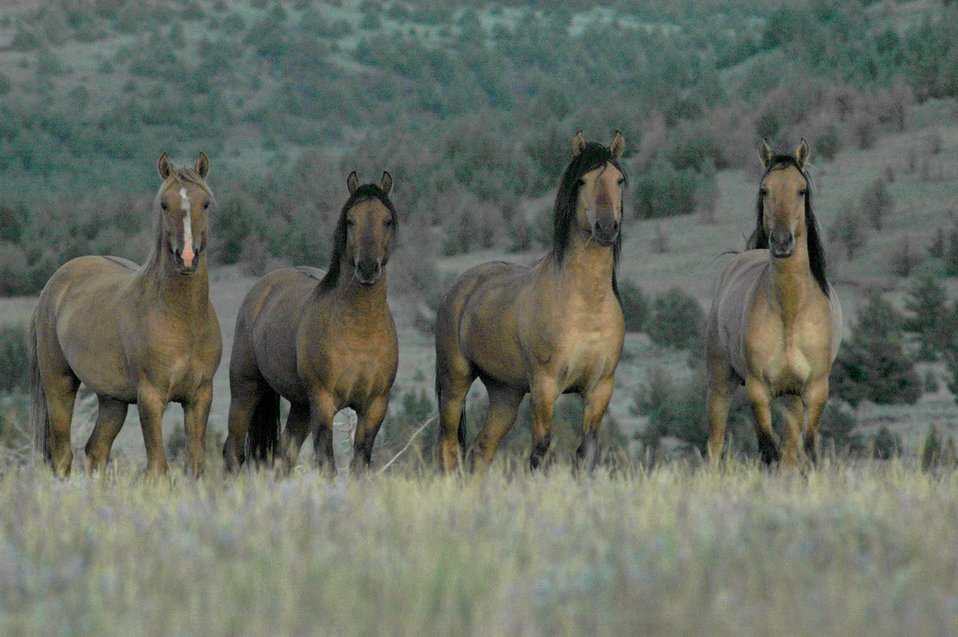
Kiger horses roam the plateaus of the Kiger Wildhorse Herd Management Area near Steens Mountain in Southeastern Oregon.